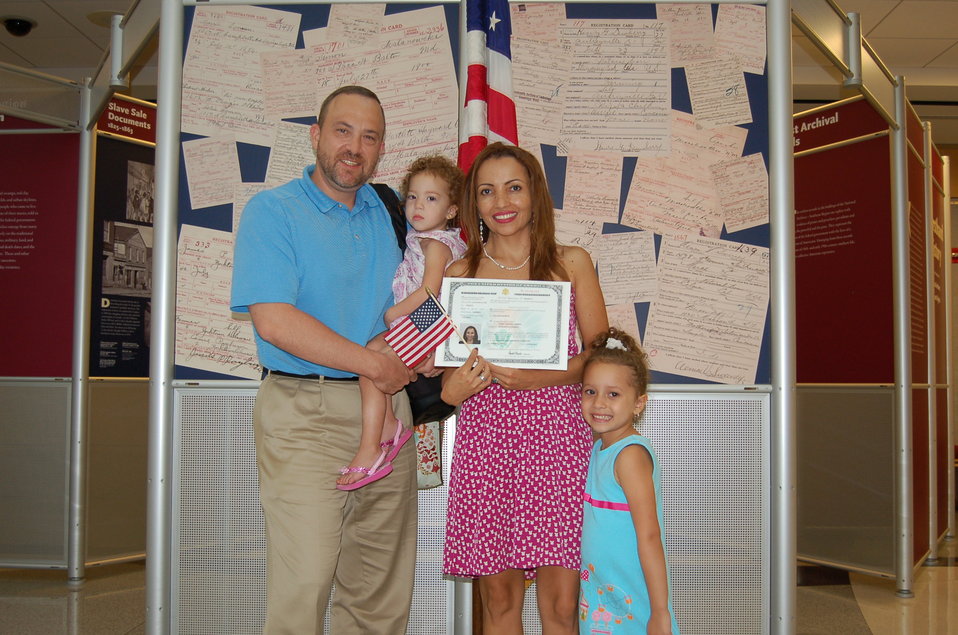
New Citizens